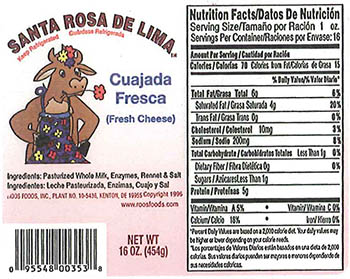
RECALLED – Variety of cheeses

February 23, 2014 – Product Recall – Roos Foods Voluntarily Recalls Variety of Cheeses (listed below) Due to Possible Health Risk.